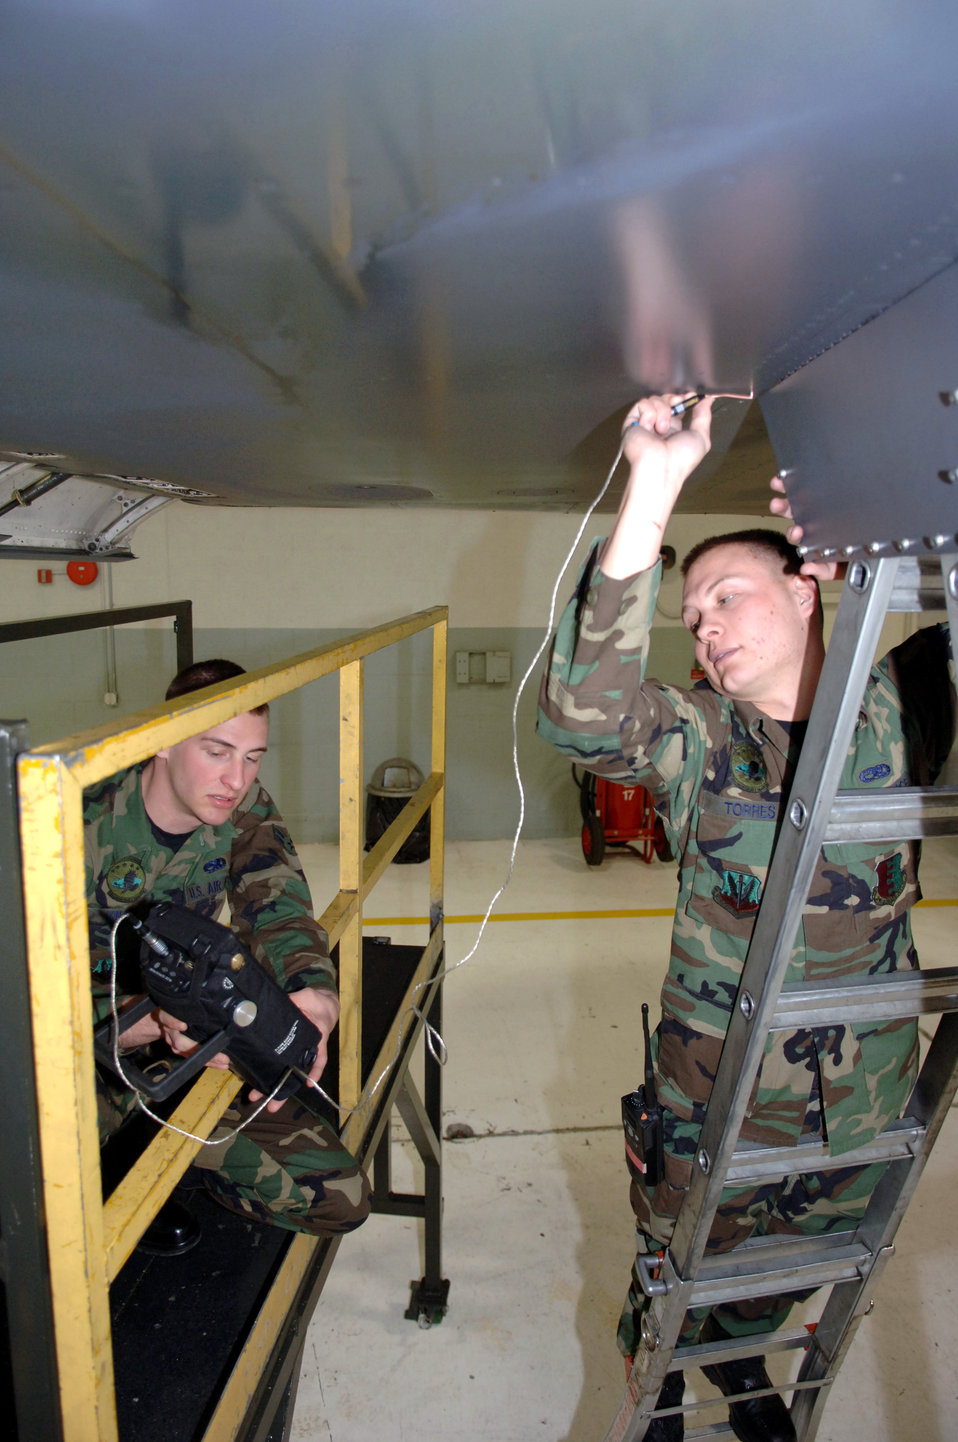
Inspections technicians know-how

Airman 1st Class Ehud Torres and A1C Trevor Knapp inspect for possible cracks with the Nortec 2000D on the B-1B Lancer March 19 at Ellsworth Air Force Base, S.D. The Airmen are nondestructive inspections technicians with the 28th Maintenance Squadron.